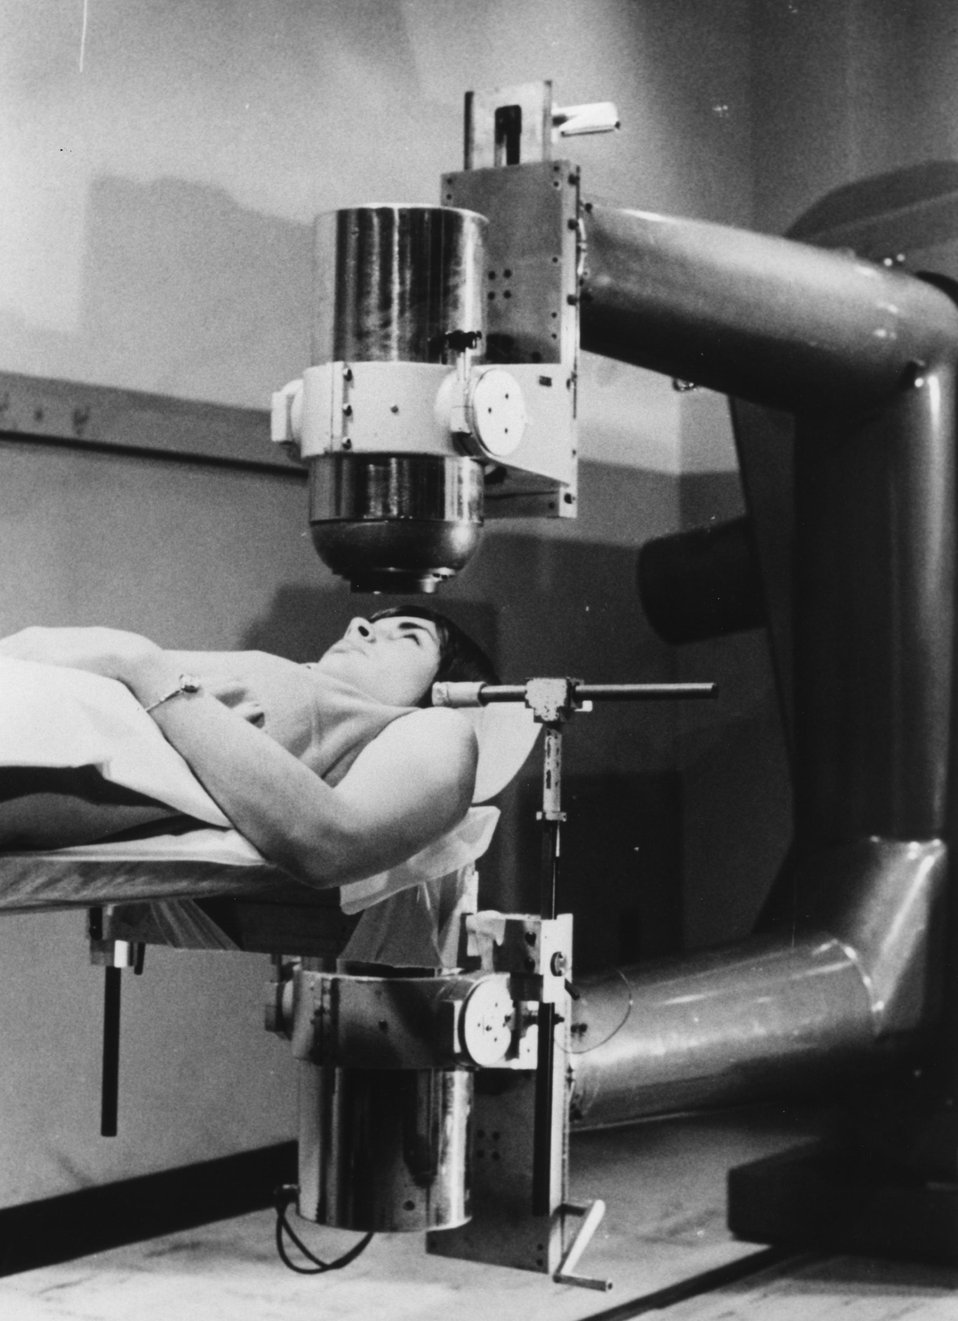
Mark II experimental brain scanner at University of Pennsylvania Hospital in Philadelphia. Circa 1971.